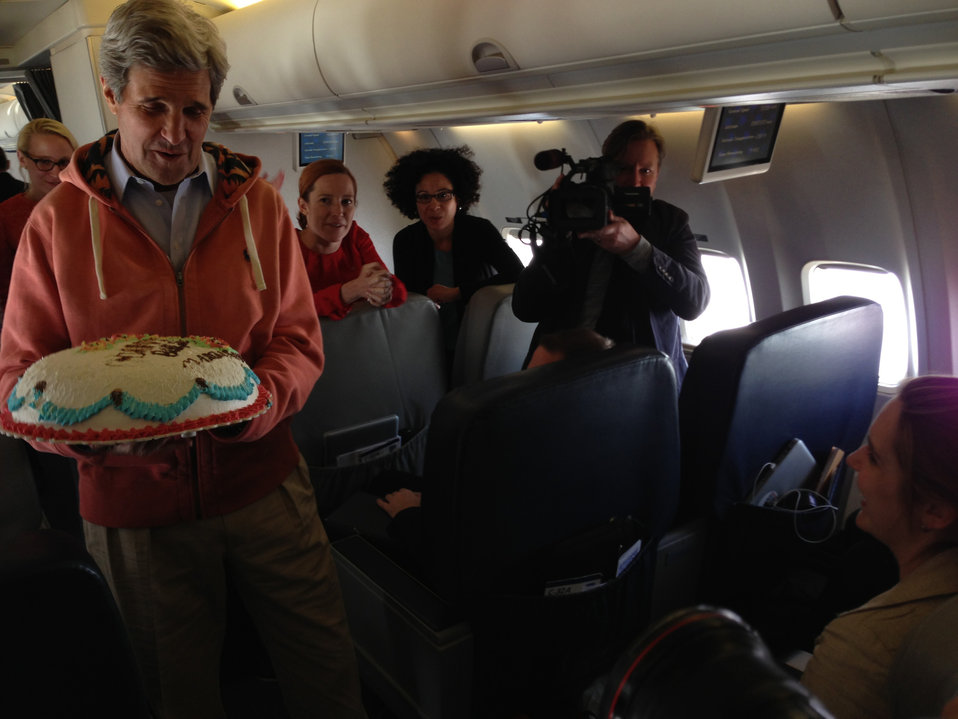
Secretary Kerry Helps Celebrate the Birthday of CBS News Correspondent Brennan

U.S. Secretary of State John Kerry presents a birthday cake to CBS News State Department correspondent Margaret Brennan, as they marked her birthday while flying from Kabul, Afghanistan, to Paris, France, March 26, 2013.